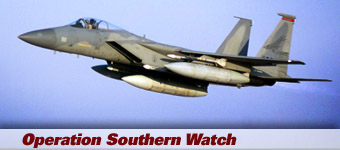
Operation Southern Watch

An F-15 Eagle takes off during Operation Southern Watch, which was a major operation in Southwest Asia from 1992-2002. U.S. officials ended an era with the inactivation of the 363rd Air Expeditionary Wing.